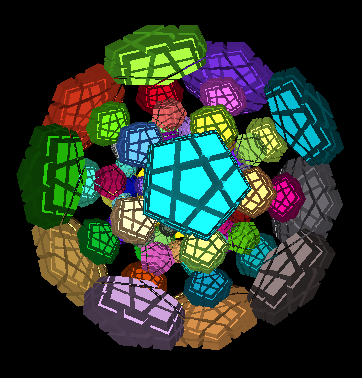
4D virtual 120 cell sequential move puzzle